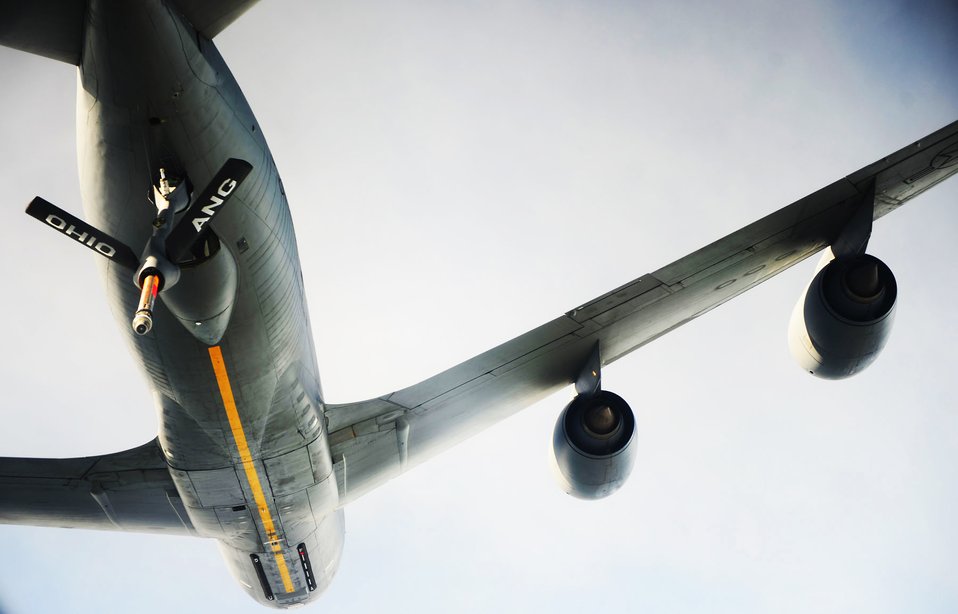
Fill up

A KC-135 Stratotanker prepares to refuel a C-17 Globemaster III Oct. 3, 2011. The KC-135 is assigned to the 121st Air Refueling Wing in Columbus, Ohio, and the C-17 is assigned to the 437th Airlift Wing at Joint Base Charleston, S.C.